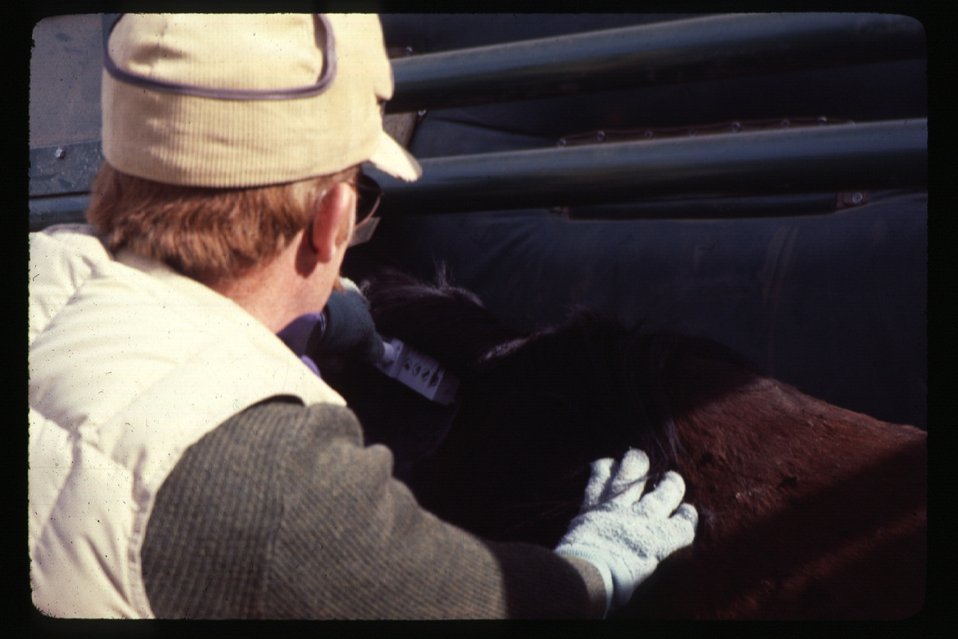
Freeze Branding wild horse in chute Wild Horse and Burro Adoption Program LSRD Lower Snake River District